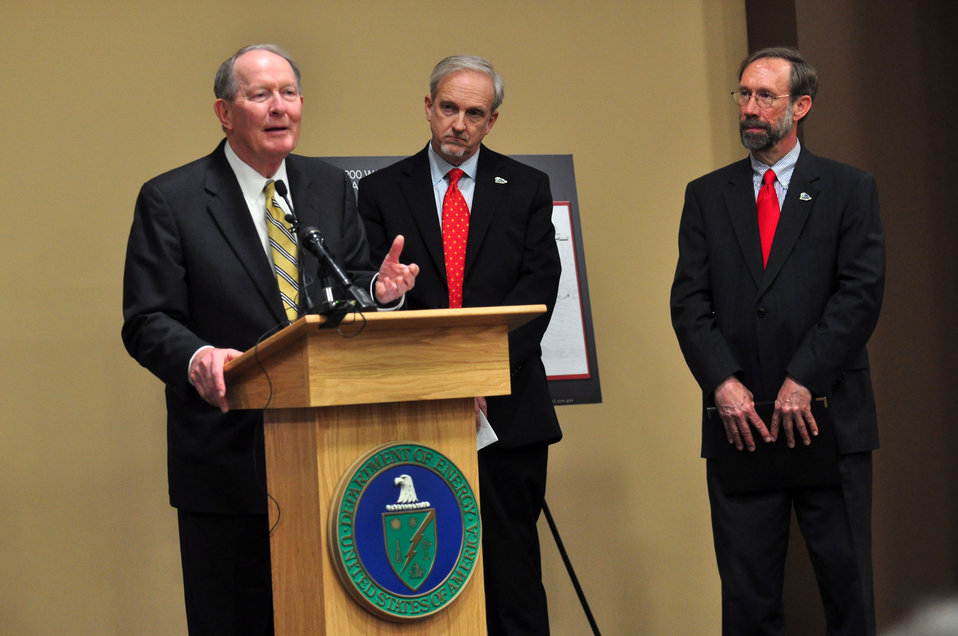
Mercury Cleanup Press Conference Y-12 Oak Ridge Speaking U.S. Sen. Lamar Alexander (R-Tenn.), with L to R EM Senior Advisor Dave Huizenga and EPA Deputy Regional Administrator for Region 4 Stan Meiburg

13-051 DOE photo Lynn Freeny 5-3-2013 Oak Ridge Tennessee